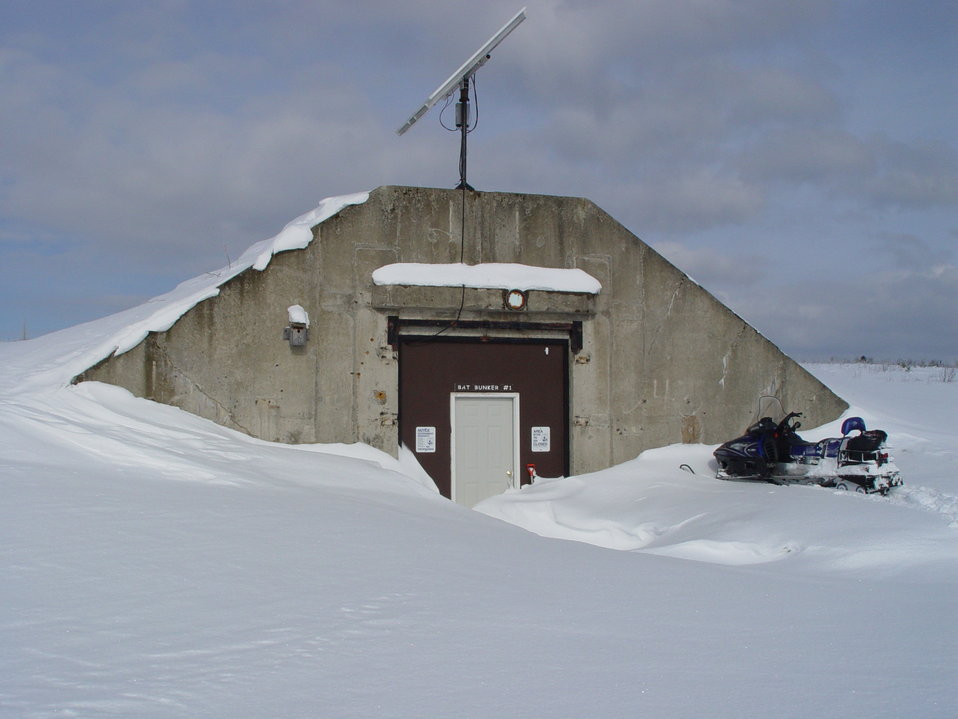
Bunker in snow, late March